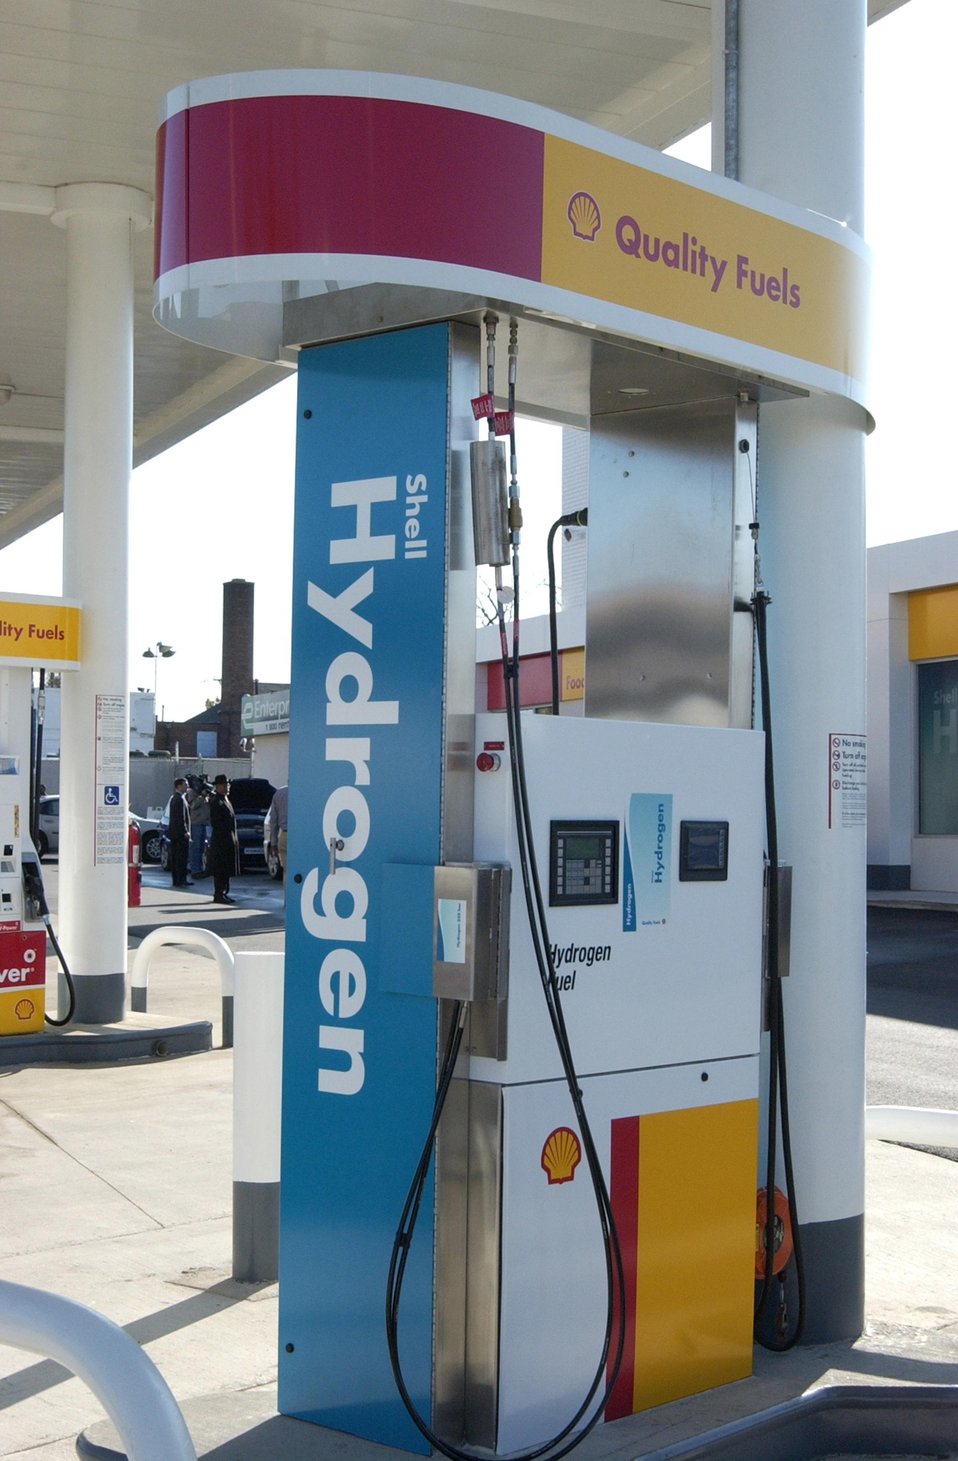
SHELL HYDROGEN REFUELING STATION IN WASHINGTON, DC.

THE DEPARTMENT OF ENERGY JOINED SHELL HYDROGEN AND GENERAL MOTORS ON NOVEMBER 10, 2004 AT THE OPENING OF THE FIRST HYDROGEN REFUELING STATION IN WASHINGTON, DC. THIS STATION IS THE FIRST INTEGRATED GASOLINE/HYDROGEN STATION IN NORTH AMERICA. THE SITE WILL BE USED TO REFUEL GENERAL MOTORS FUEL CELL VEHICLES IN THE DOE VEHICLE AND INFRASTRUCTURE LEARNING DEMONSTRATION AND VALIDATION PROJECT. THIS IS THE FIRST STATION TO BE DEPLOYED IN A POTENTIAL WASHINGTON, DC TO NEW YORK HYDROGEN CORRIDOR.